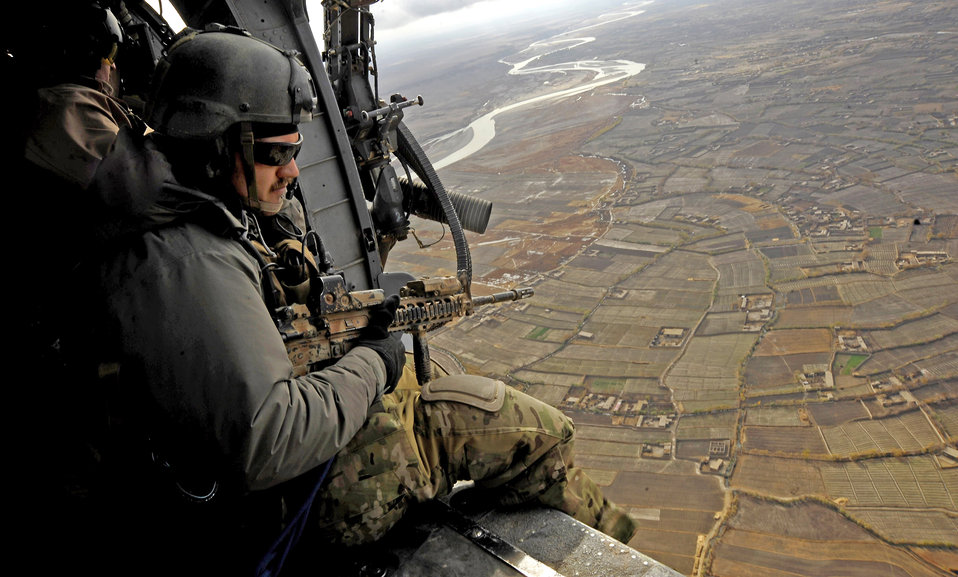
Squadron highlights capabilities during Afghan rescue mission

A pararescueman provides area security while another HH-60G Pave Hawk is picking up a patient Dec. 8, 2009. The members of the 66th Expeditionary Rescue Squadron can respond to medical evacuations in less than seven minutes to pick up patients in need of care. The pararescueman is assigned to the 66th Expeditionary Rescue Squadron.